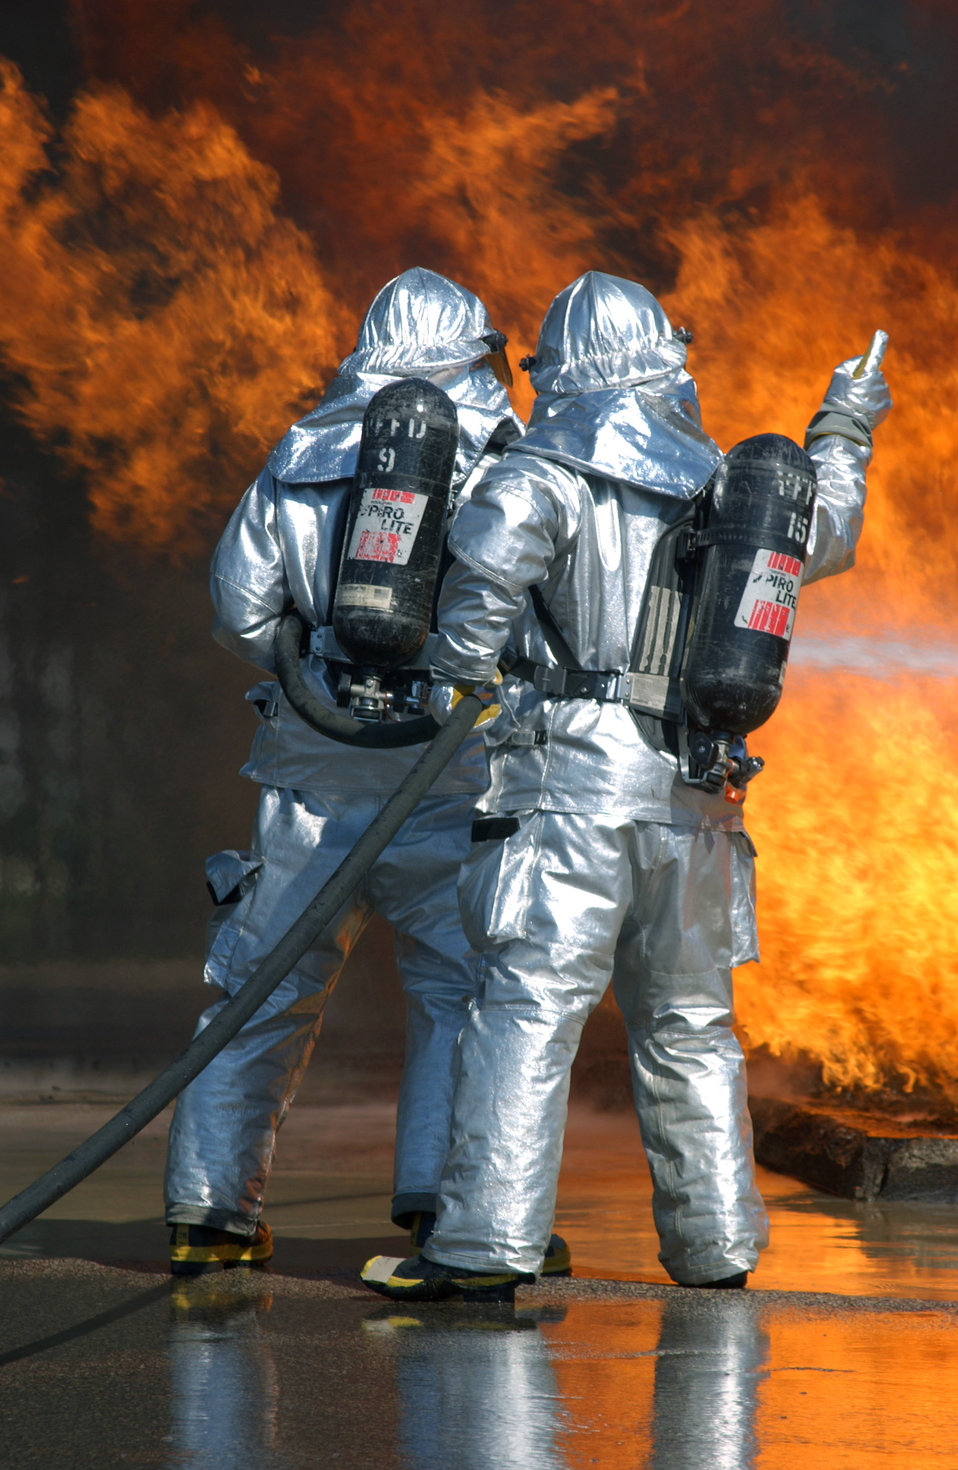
Fighitng fires

VOLK FIELD AIR NATIONAL GUARD BASE, Wis. -- A firefighter from the 167th Airlift Wing in Martinsburg, W. Va., fights a fire during a readiness training exercise here Sept. 21. The West Virginia Air National Guardsman was responding to a simulated aircraft accident.